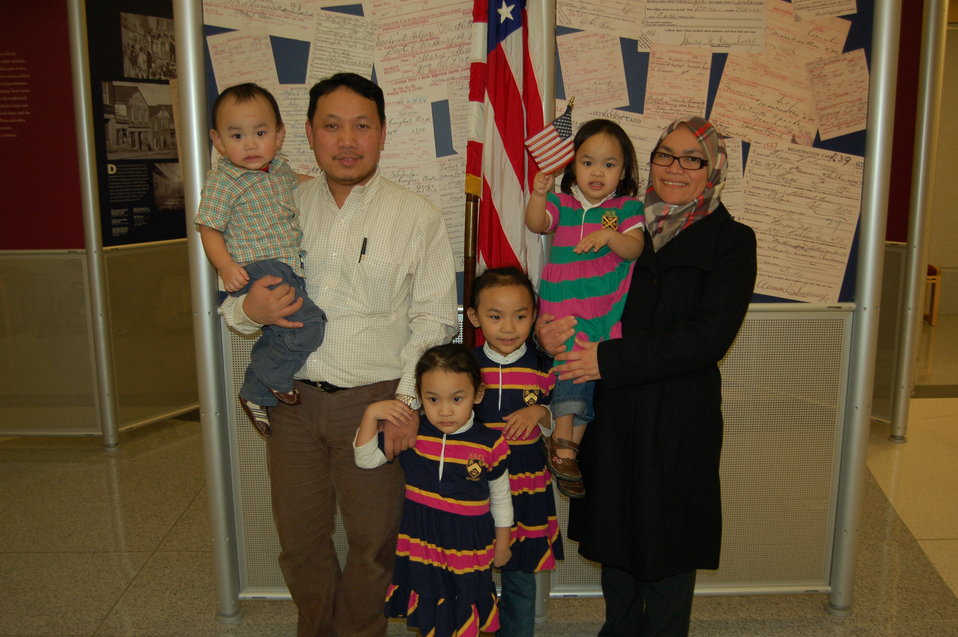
New Citizens